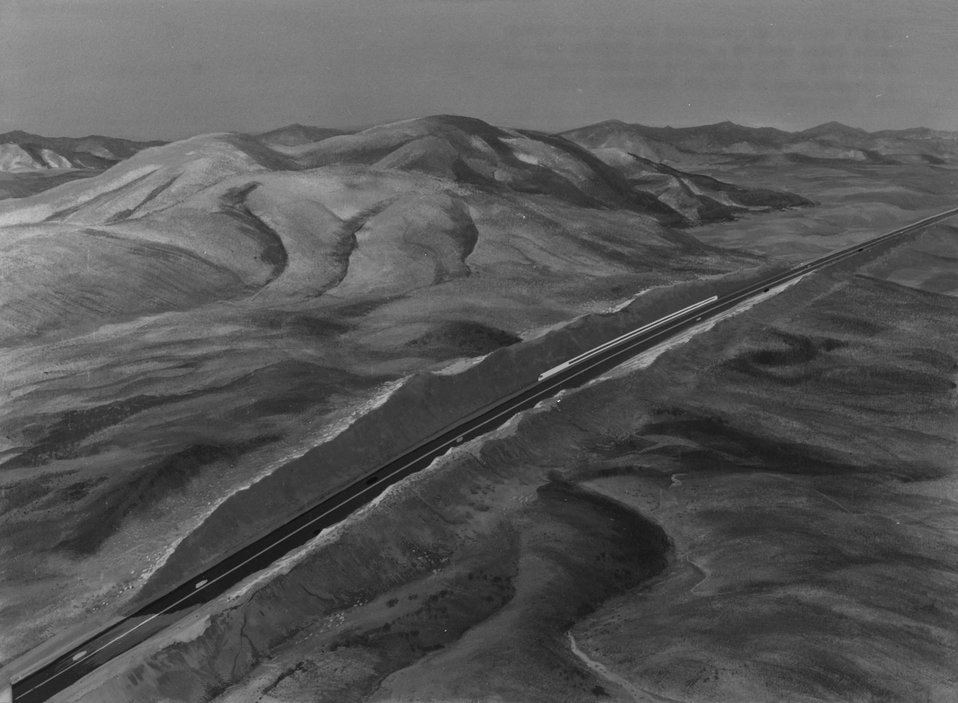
Artist's concept of connected nuclear row-charge craters being used as a combined highway and railway pass. c. 1966